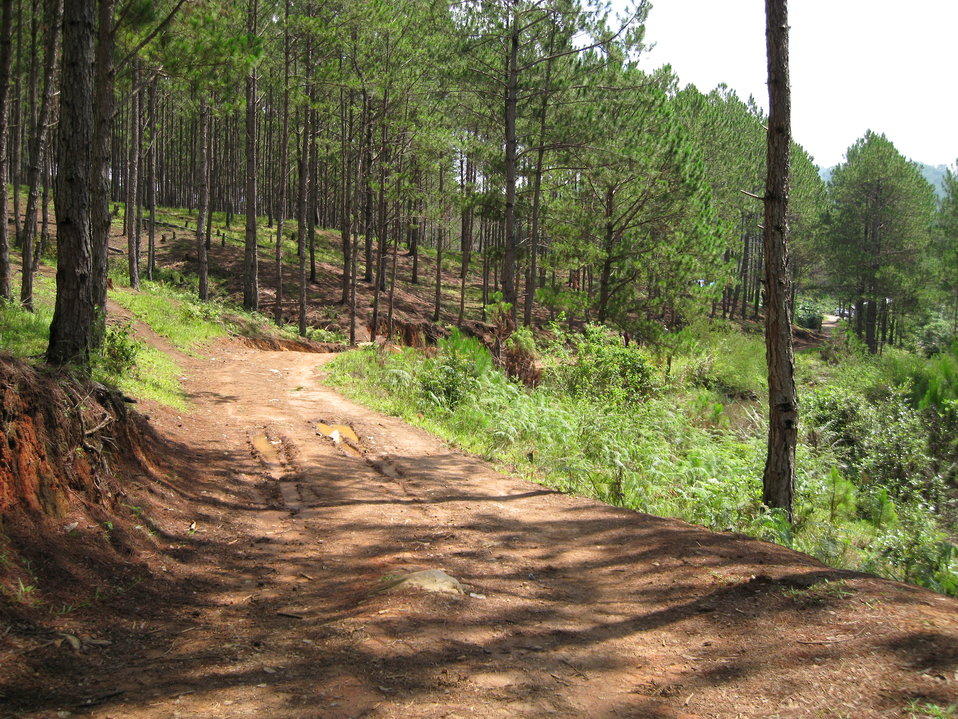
Forests in Vietnam